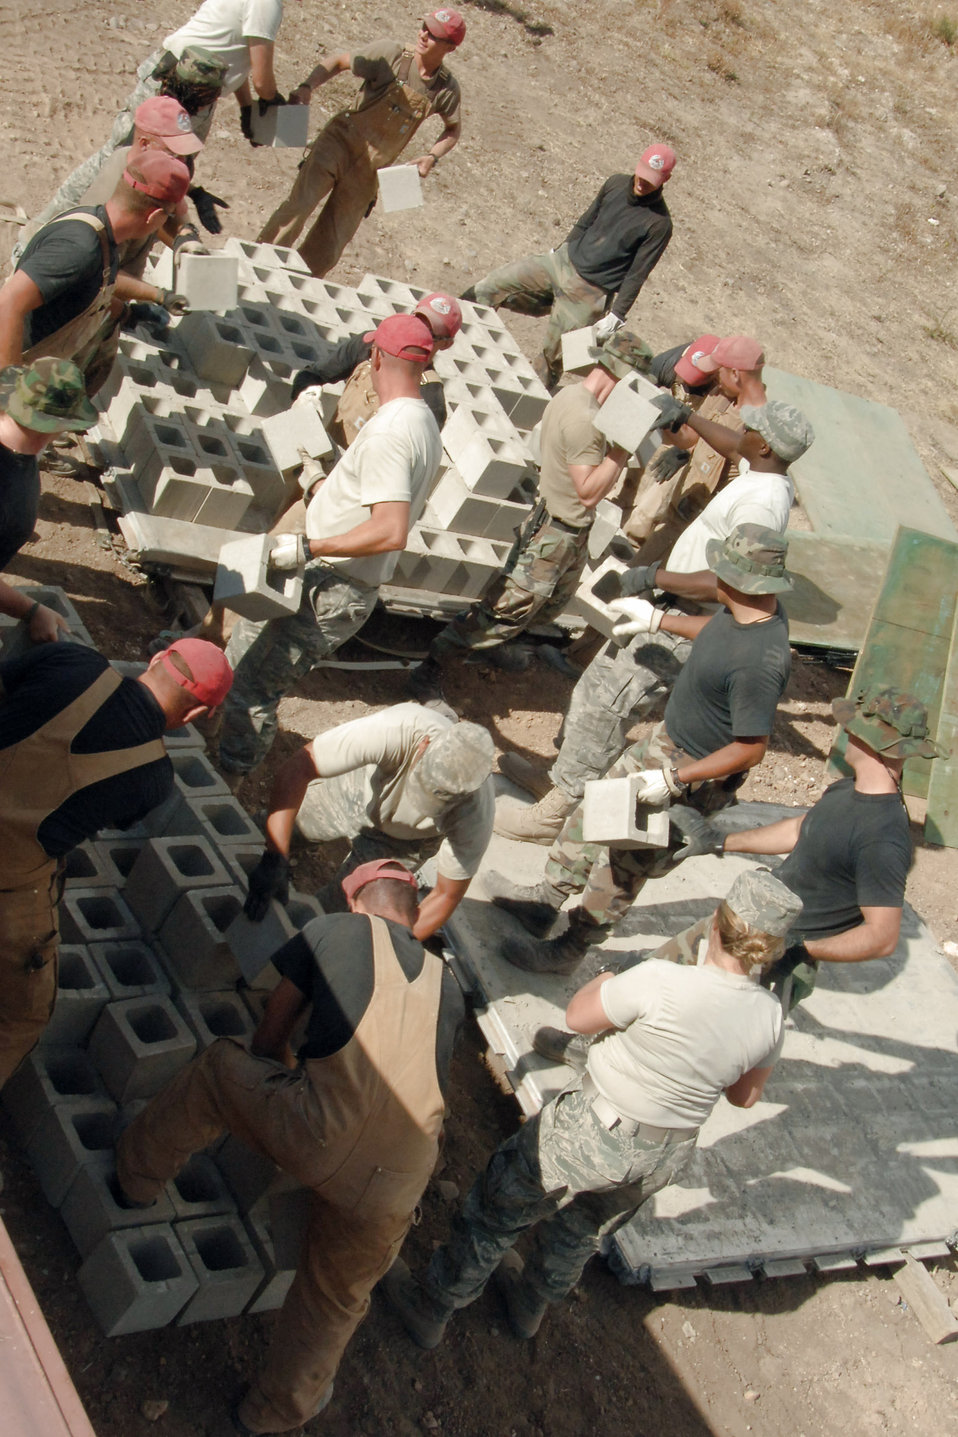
New Horizons Peru

Airmen assigned to Task Force New Horizon-Peru 2008 stack cement blocks June 3 to begin the construction of a clinic in Yanama, Peru, in support of New Horizons Peru 2008, a humanitarian event that benefits thousands of Peruvians. Nearly 300 members from the U.S. military came together to provide Peruvians with new schools, clinics and water wells.